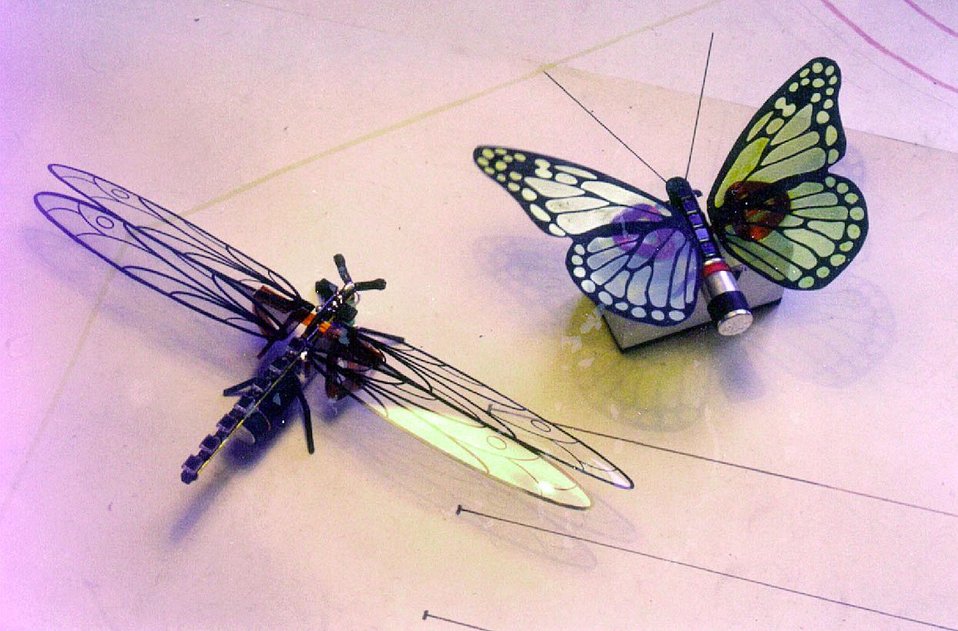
TWO INSECT BEAM (BIOLOGY, ELECTRONICS, AESTHETICS, AND MECHANICS) ROBOTS.

BEAM, WHICH STANDS FOR BIOLOGY, ELECTRONICS, AESTHETICS AND MECHANICS, REFERS TO THE APPROACH TO ROBOTICS PIONEERED BY BEAM FOUNDER, LANL SCIENTIST MARK TILDEN. BEAM ROBOTS ARE MODELED MORE ON THE SIMPLE, REPETITIVE BIOLOGICAL PROCESSES OF INSECTS THAN THE COMPLEX, HUMAN-LIKE OPERATIONS THAT ARE THE GOAL OF TRADITIONAL ROBOTS.